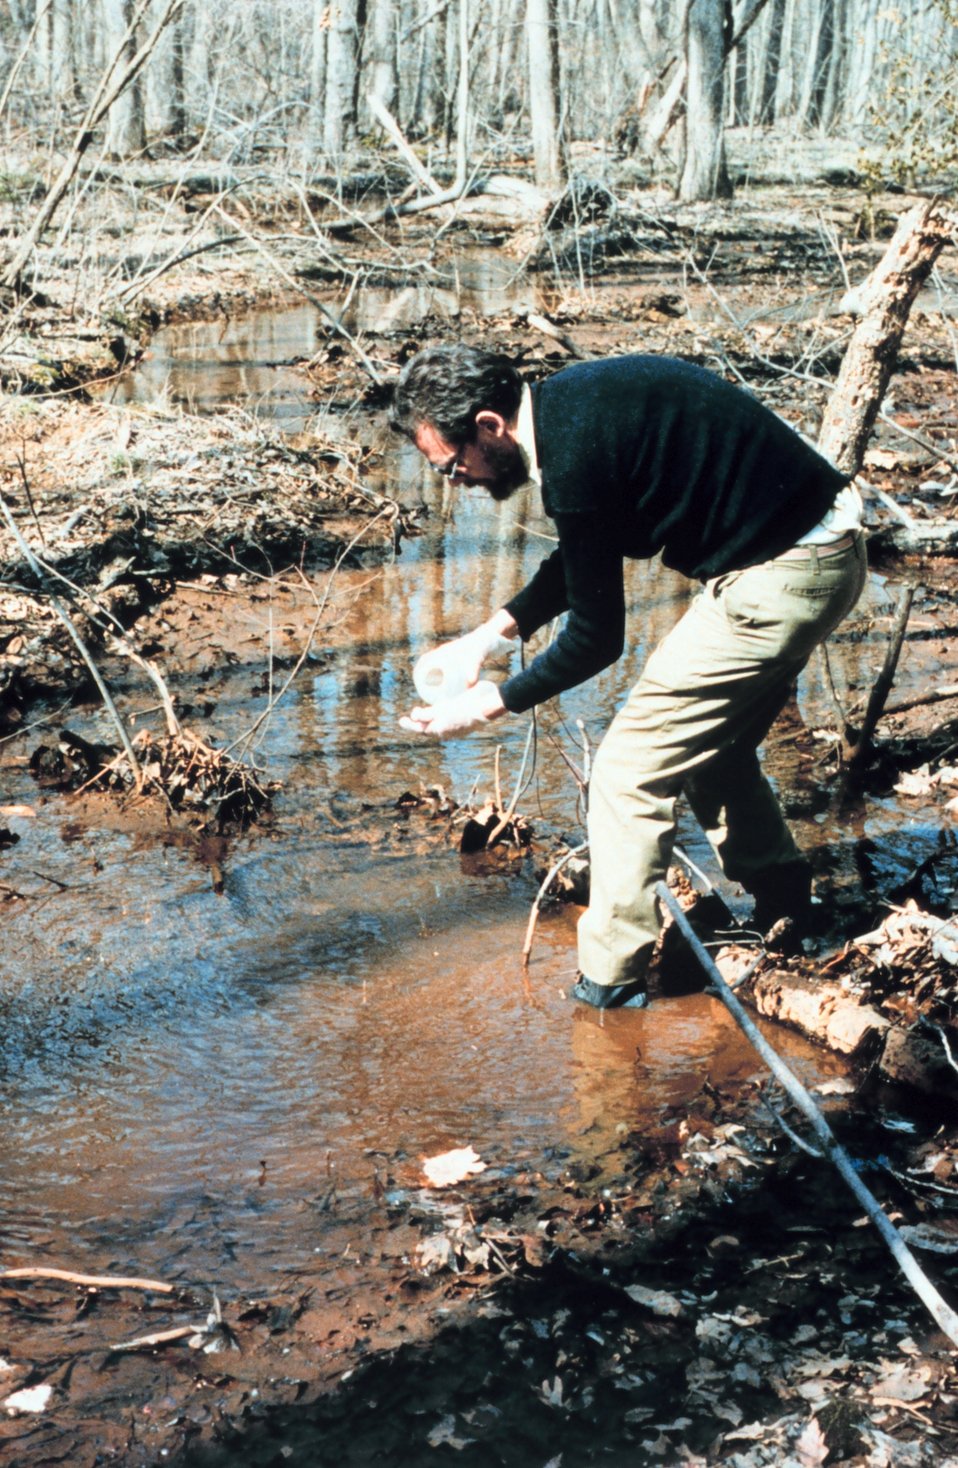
Collecting water samples for acid rain analysis in a Chesapeake wetland tributary.